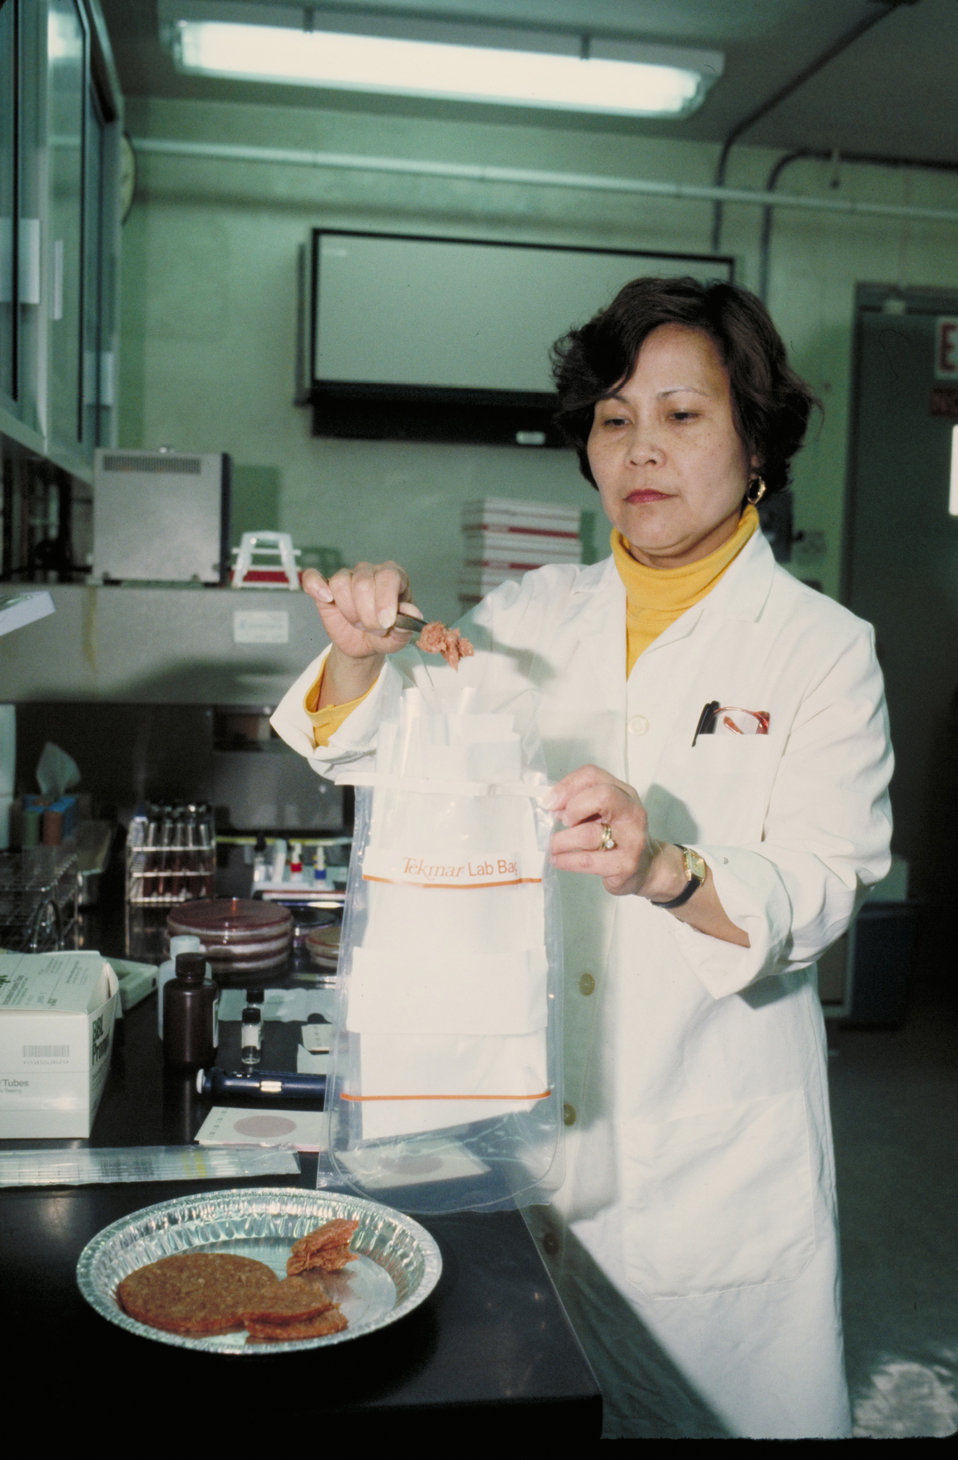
U.S. Department of Agriculture’s (USDA) Food Safety Inspection Service (FSIS) scientist conducts microbiological tests for the presence of specific pathogenic microorganisms in or on the product. on March 15, 1993 USDA photo by Lester Shepherd.